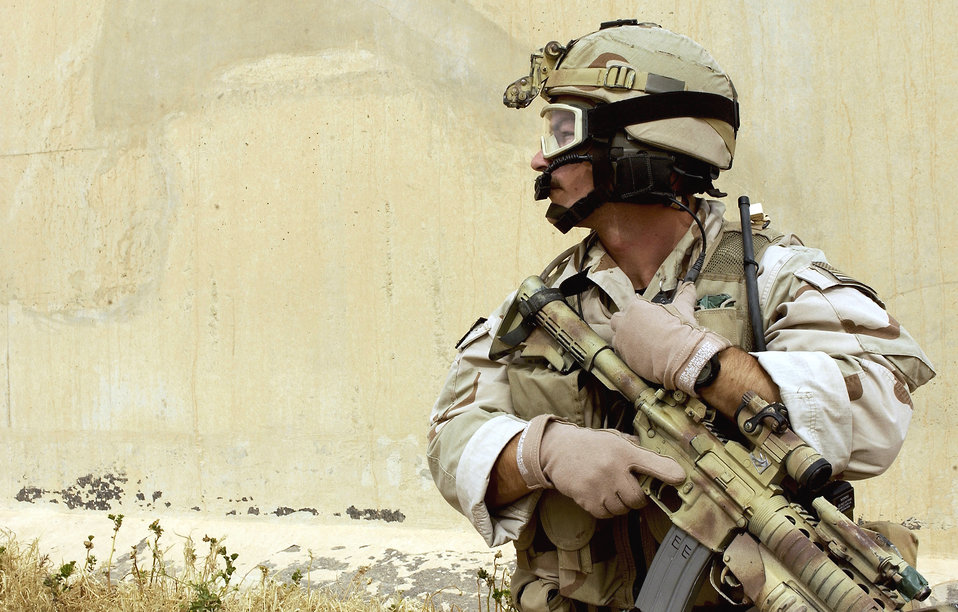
All secure

BALAD AIR BASE, Iraq -- An Air Force pararescueman secures a landing zone here March 30. He is assigned to the 64th Expeditionary Rescue Squadron.